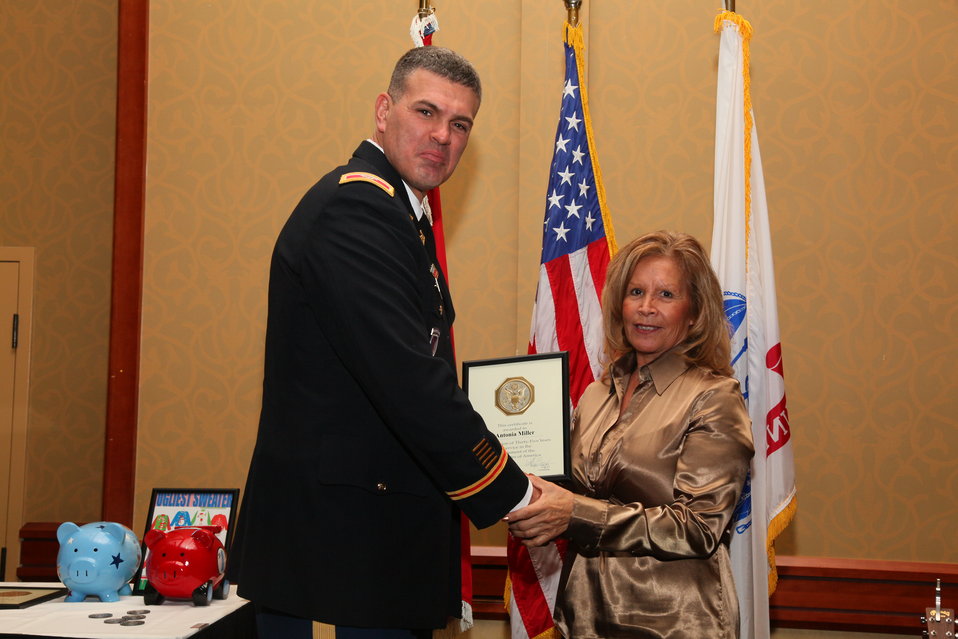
Sacramento District Holiday Party 2011